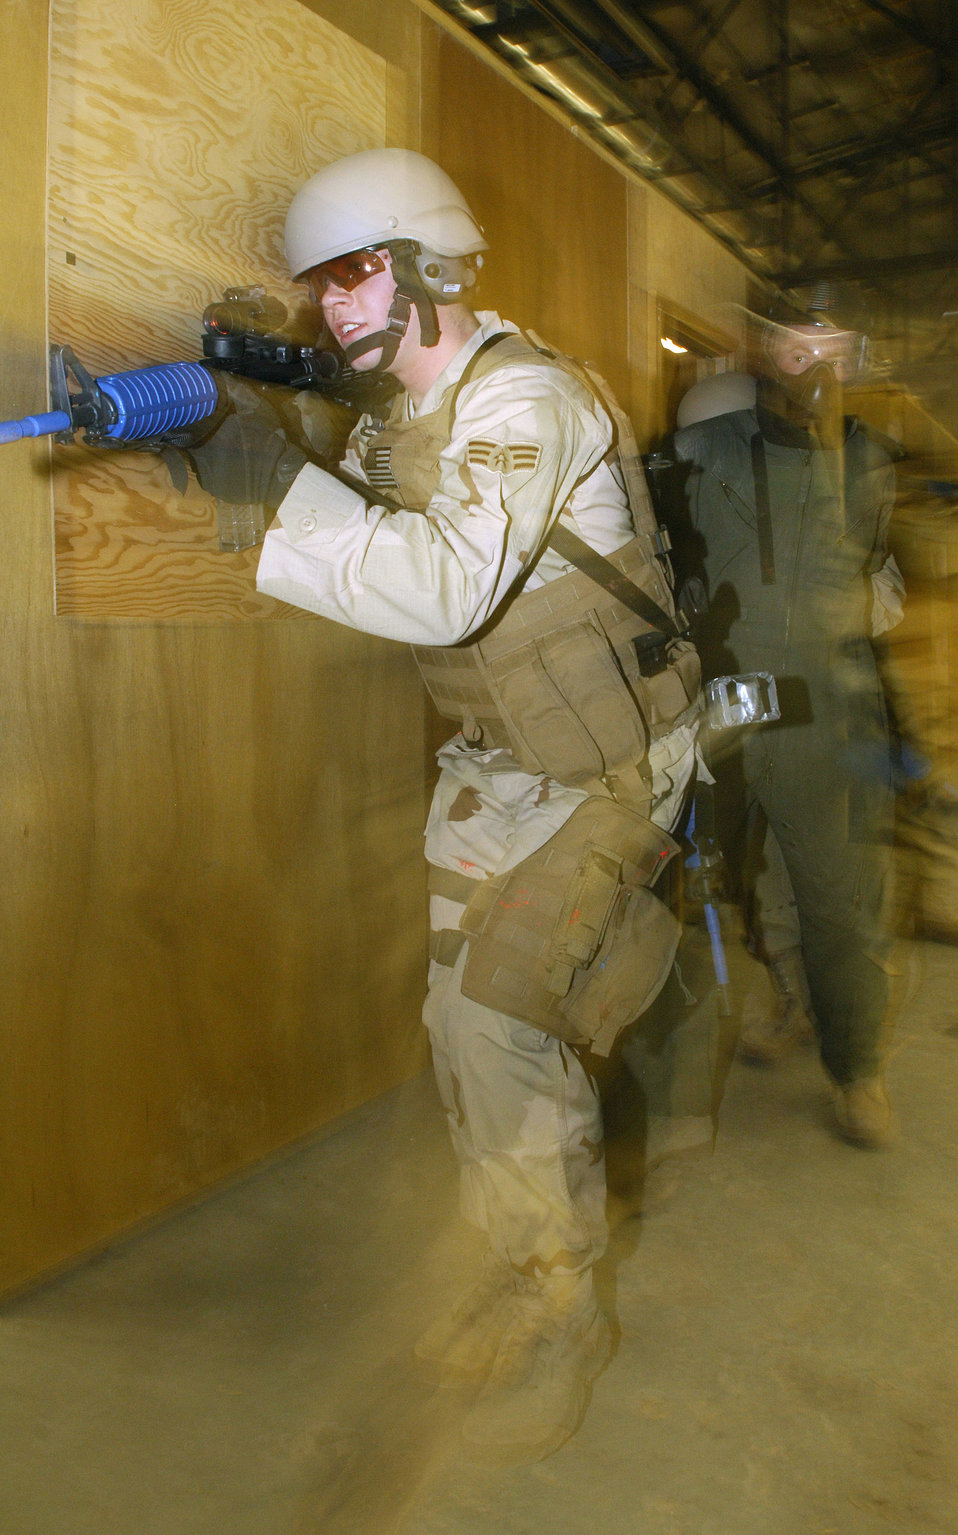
Security forces train Airmen to protect space resources

Airmen of the 90th Ground Training Squadron enter a room with a simulated hostage situation in place Feb. 8 at Camp Guernsey, Wyo. Once the enemy has been suppressed the hostage is quickly escorted away from the site. Campt Guernsey is an Army Reserve training ground used by the 90th Space Wing for convoy security, sniper training and close quarters combat training including other specialty training.